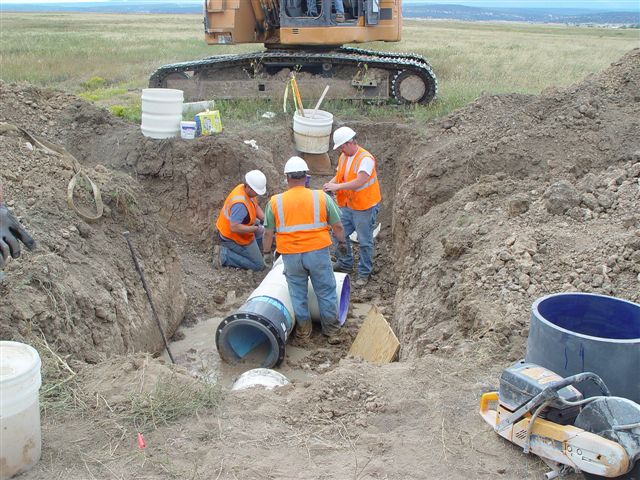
Las Vegas 7

Deerfield Corp. workers evaulate the placement of a new PVC pipe as part of a Recovery Act-funded rehabilitation project at Las Vegas NWR in Las Vegas, N.M. The contractor removed old piping and replaced it with a new, more efficient water delivery and pipeline system that supplies water to migratory bird habitat.